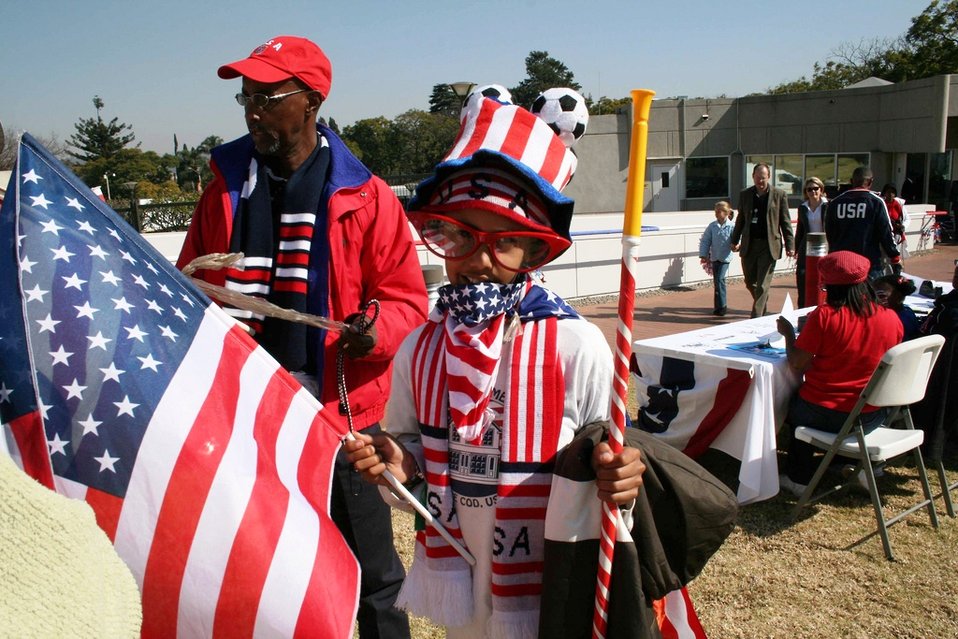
Fans show their team spirit at the Team USA pep rally before the U.S. vs. Algeria World Cup match on June 23, 2010, in Pretoria, South Africa.